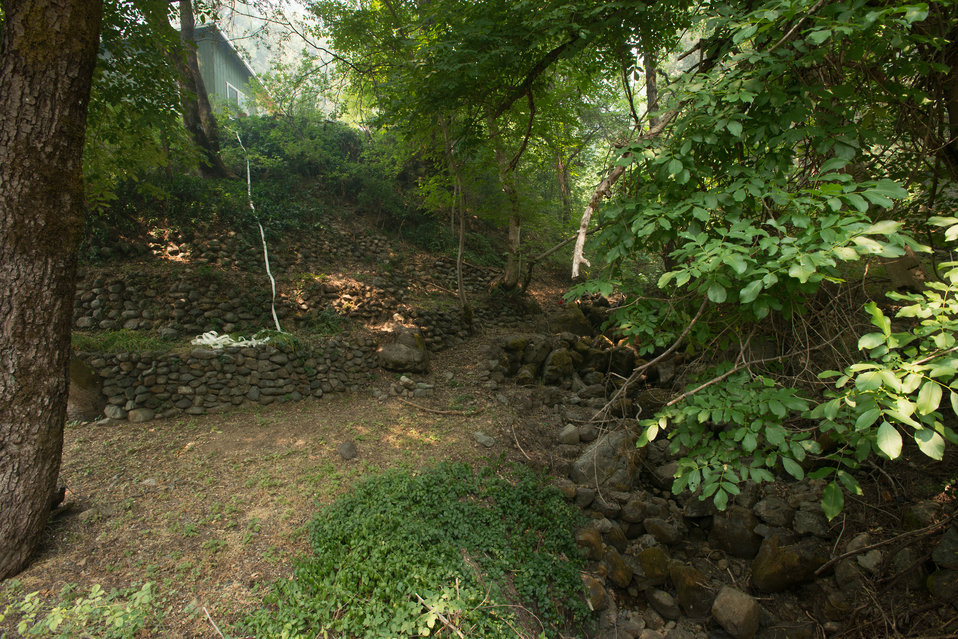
Engine Crews have prepositioned fire hoses to either run sprinklers that spray water on structures and surrounding areas, or to provide initial attack on small fires that may start in Sawyers Bar, CA, during the Salmon River Complex Fire, northwest of Sawyers Bar and west of Etna and Yreka, CA in the Klamath National Forest, on Wednesday, Aug. 6, 2013.